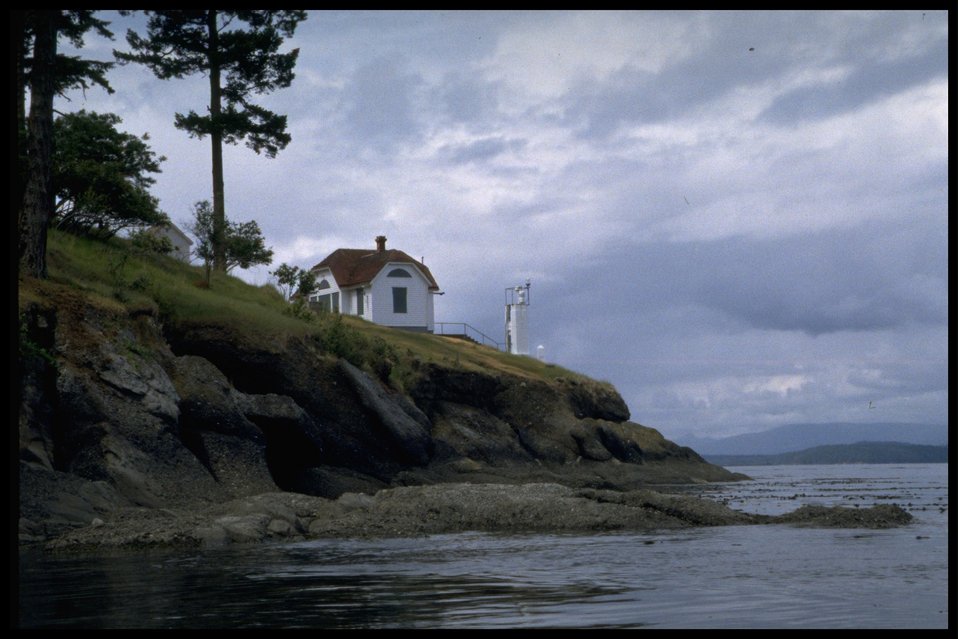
Turn Point from water with light station and buildings. Series of 17 photos.